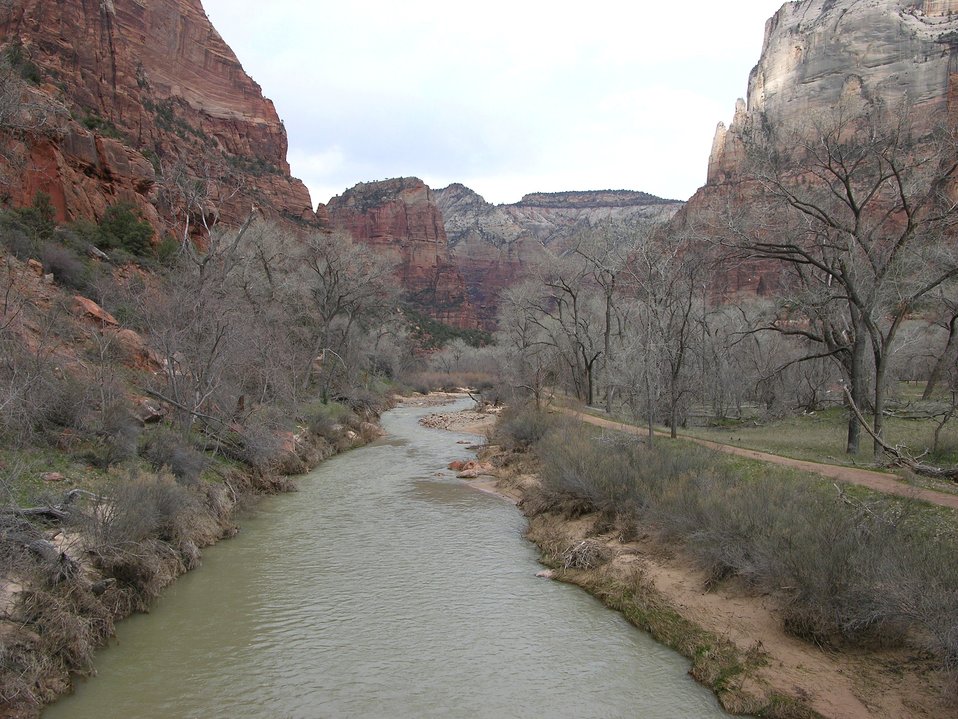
A view in Zion National Park